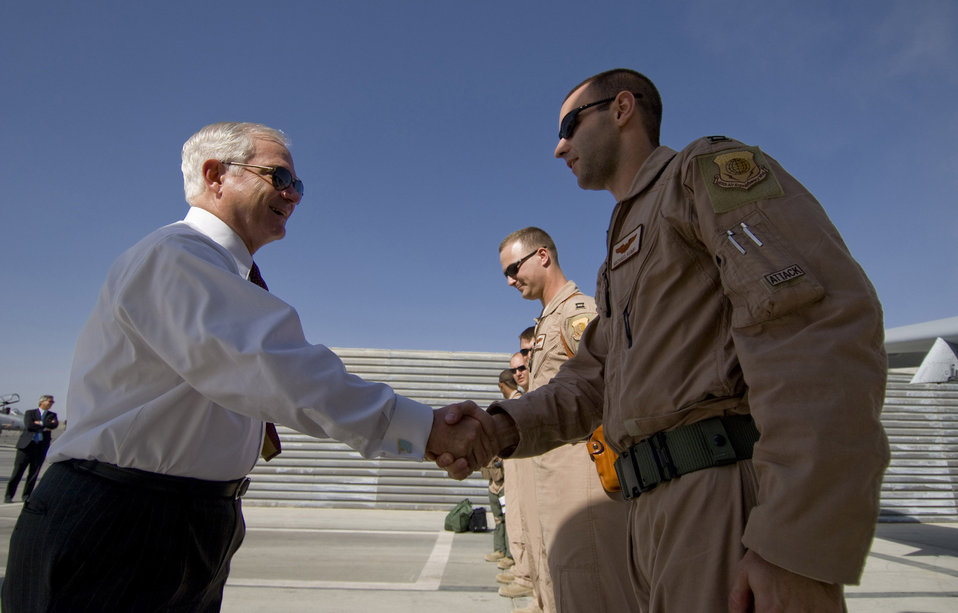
Secretary Gates examines close-air support at Bagram

Secretary of Defense Robert M. Gates shakes hands with A-10 Thunderbolt II pilot Capt. Michael Kump Sept. 17 at Bagram Airfield, Afghanistan. Captain Kump is deployed from Moody Air Force Base, Ga.